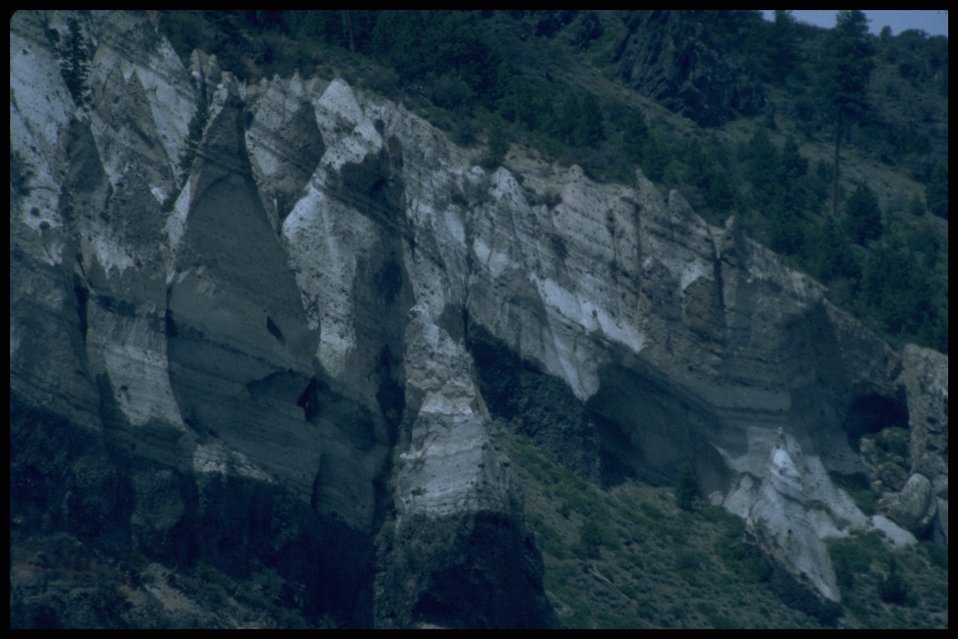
Summer Lake Area rock, Lakeview District.